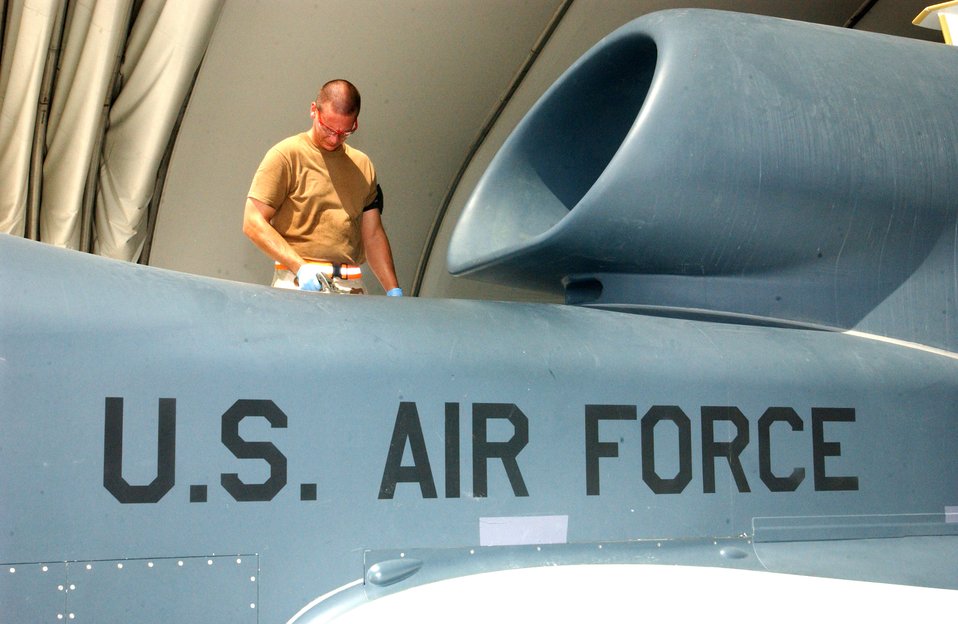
Global Hawk, global mission

Staff Sgt. Michael Wilmoth refuels a Global Hawk unmanned aerial vehicle following a mission Oct. 3 at a deployed location in Southwest Asia. The Global Hawk can survey large geographic areas with pinpoint accuracy to give military decision-makers the most current information about enemy locations, resources and members. Sergeant Wilmoth is assigned to the 380th Expeditionary Maintenance Group.